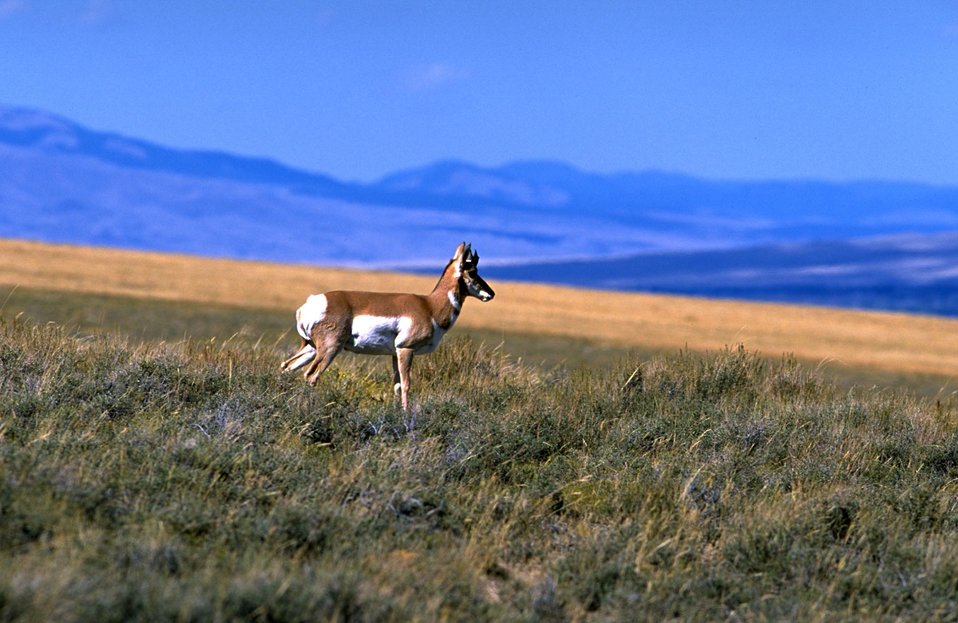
Antelope on a grassy hillside with Centennial Valley in background